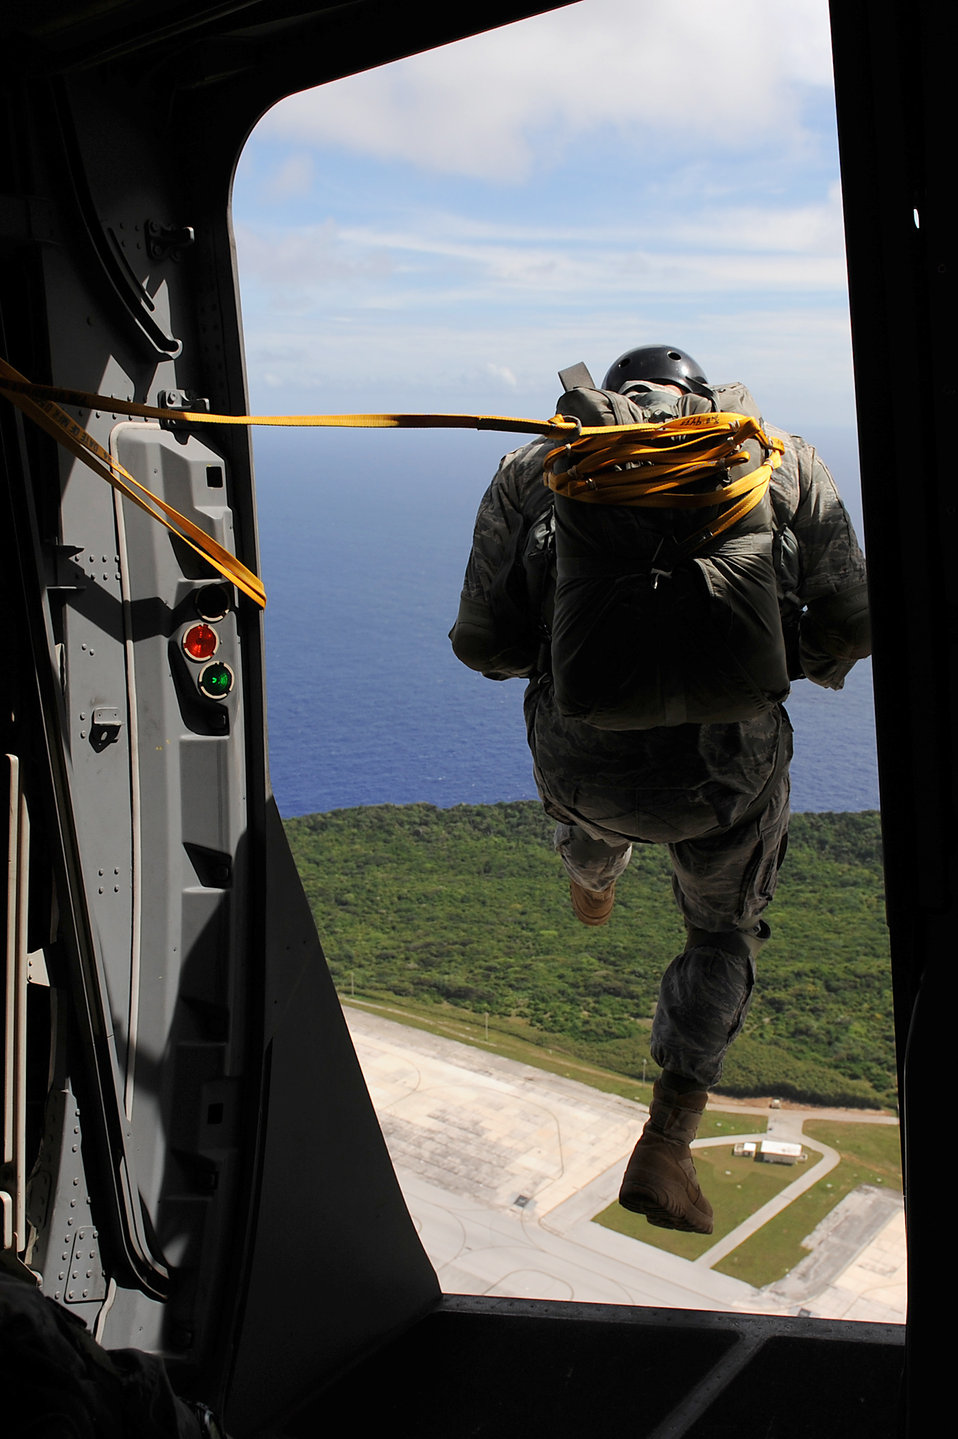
High stepping over Guam

An Airman from the 36th Contingency Response Group jumps out C-17 Globemaster III over the Andersen Air Force Base, Guam, drop zone Jan. 13, 2011, during static-line jump training. The Globemaster is assigned to the 535th Airlift Squadron from Joint Base Pearl Harbor-Hickam, Hawaii.